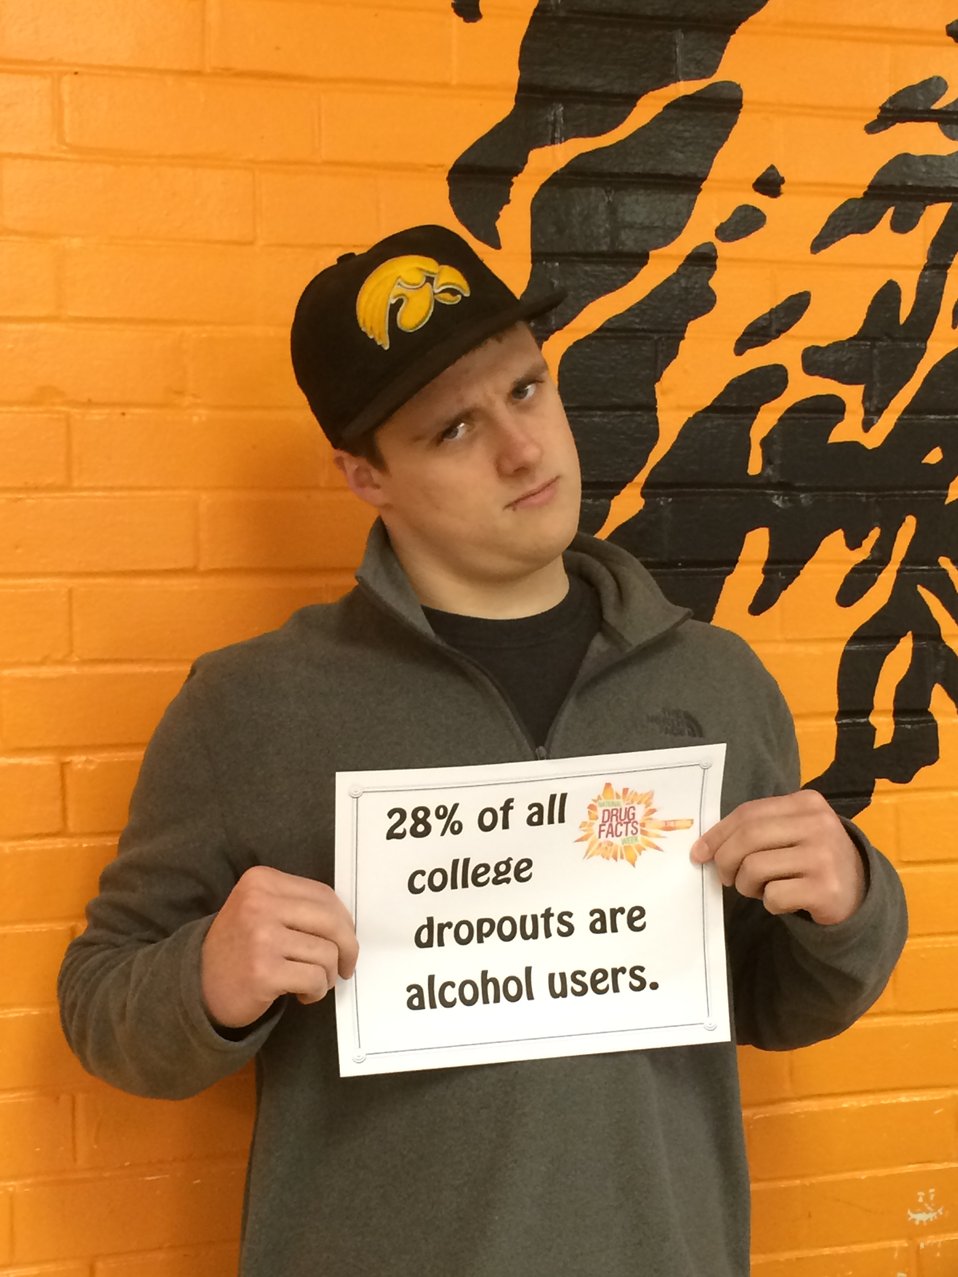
I'm Shattering the Myths Because...

Teenagers from the Van Buren County SAFE Coalition's, Youth Leadership Council (YLC) in Keosauqua, Iowa participate in various events during National Drug Facts Week, 2014.